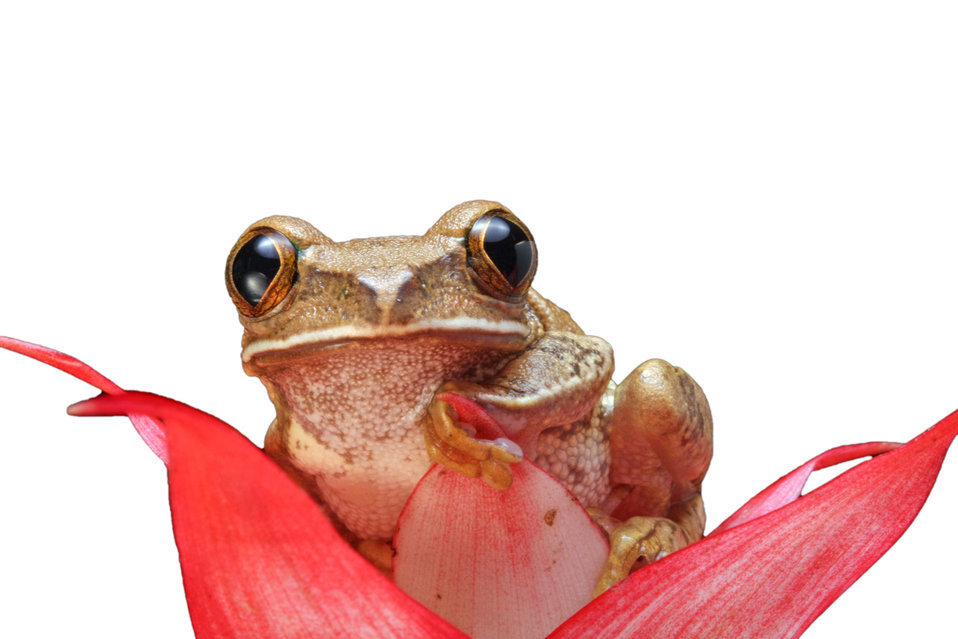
Frog isolated

Close-up macro portrait of a marbled reed frog or painted reed frog isolated on white background.